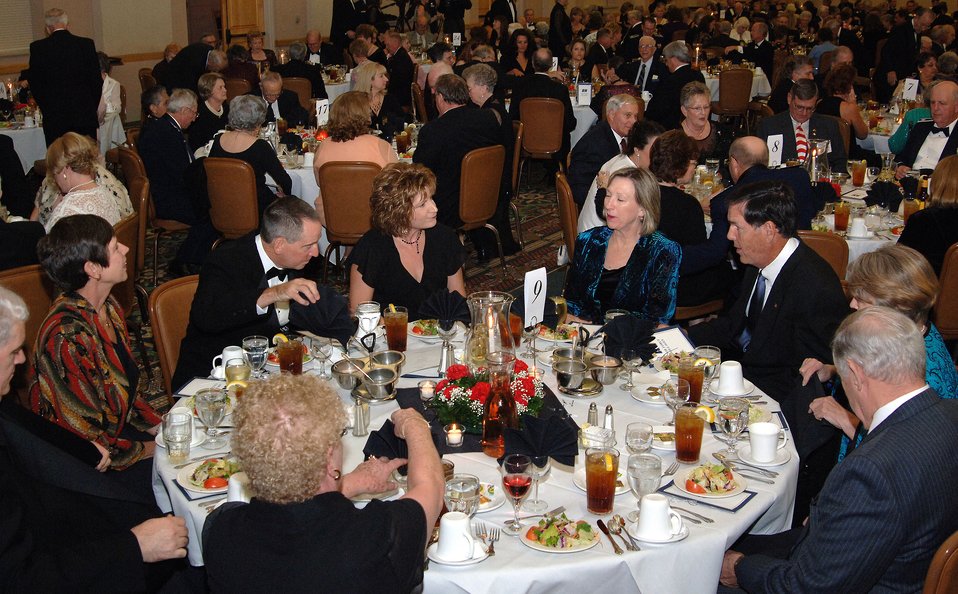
General tributes Air Force Villages

People talk and await their meal at the Air Force Villages dinner Oct. 20, 2006 at Lackland Air Force Base, Texas. Air Force Chief of Staff General T. Michael Moseley spoke at the event. The Villages offer premier active living communities for retired and honorably seperated officers and their spouses, widows and widowers over the age of 62.